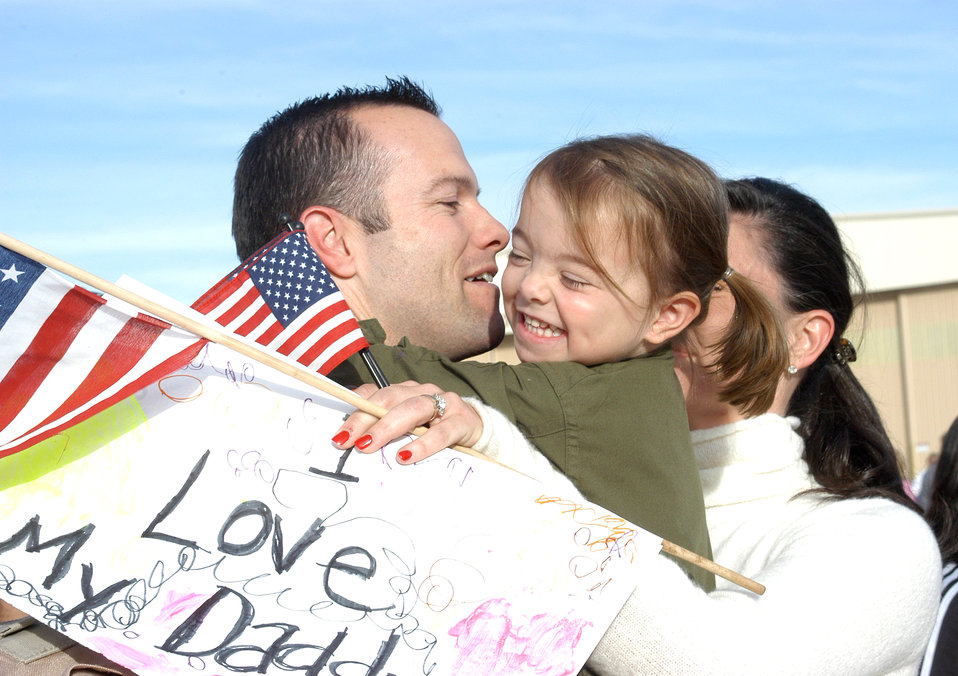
Welcome home

NAVAL AIR STATION – JOINT RESERVE BASE FORT WORTH, Texas (AFPN) -- Capt. Chris Gough hugs his daughter after returning from Iraq. More than 150 301st Fighter Wing Airmen returned from Balad Air Base, Iraq Dec. 11. Captain Gough is a pilot with the 457th Fighter Squadron.